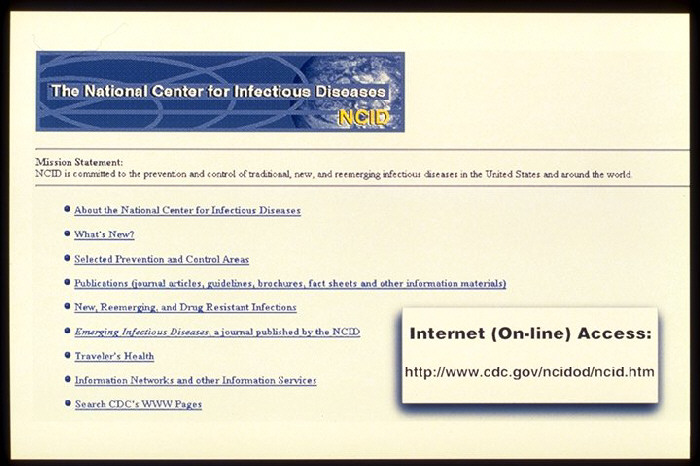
NCID Internet Home Page (photo)